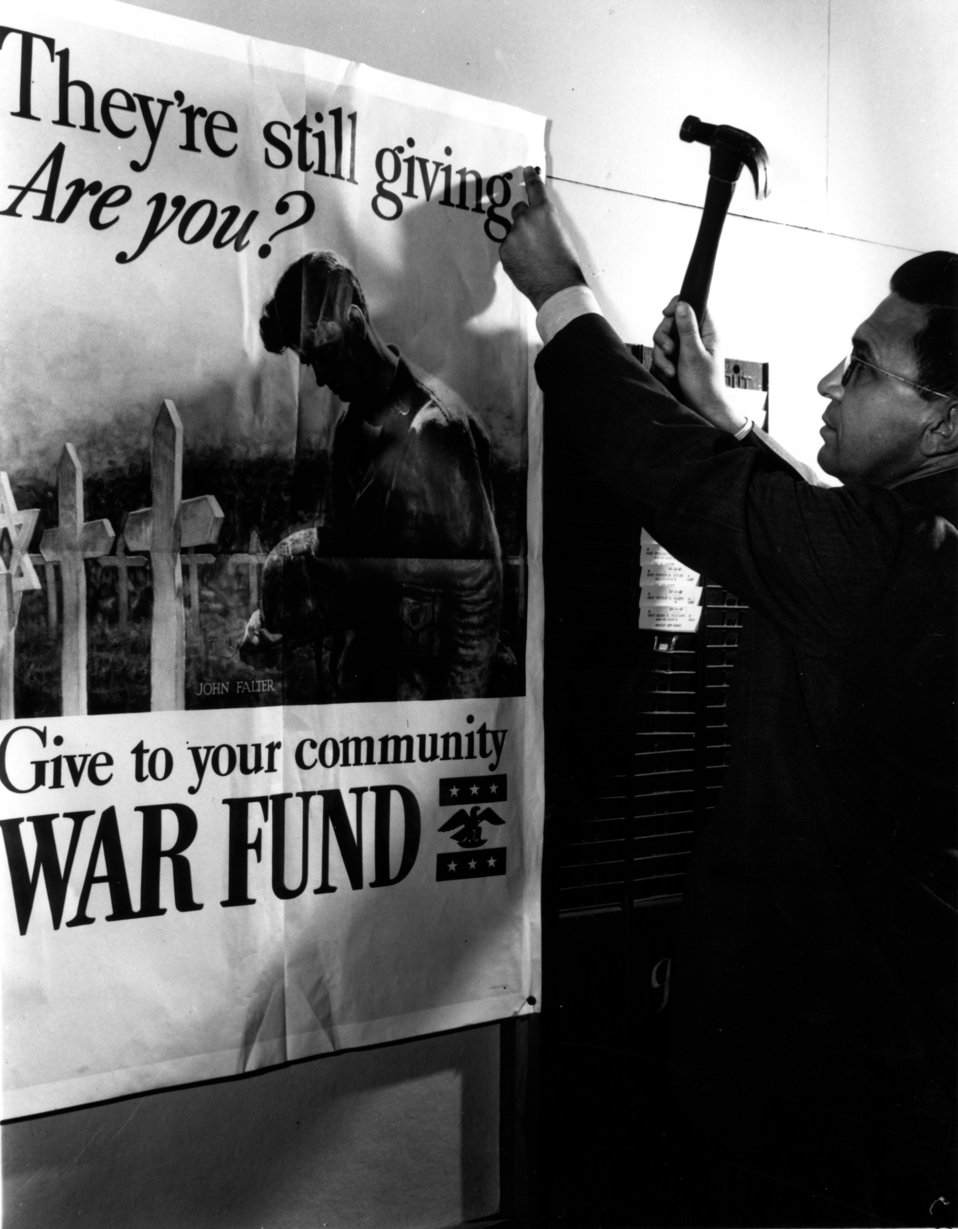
Daily Life at Oak Ridge